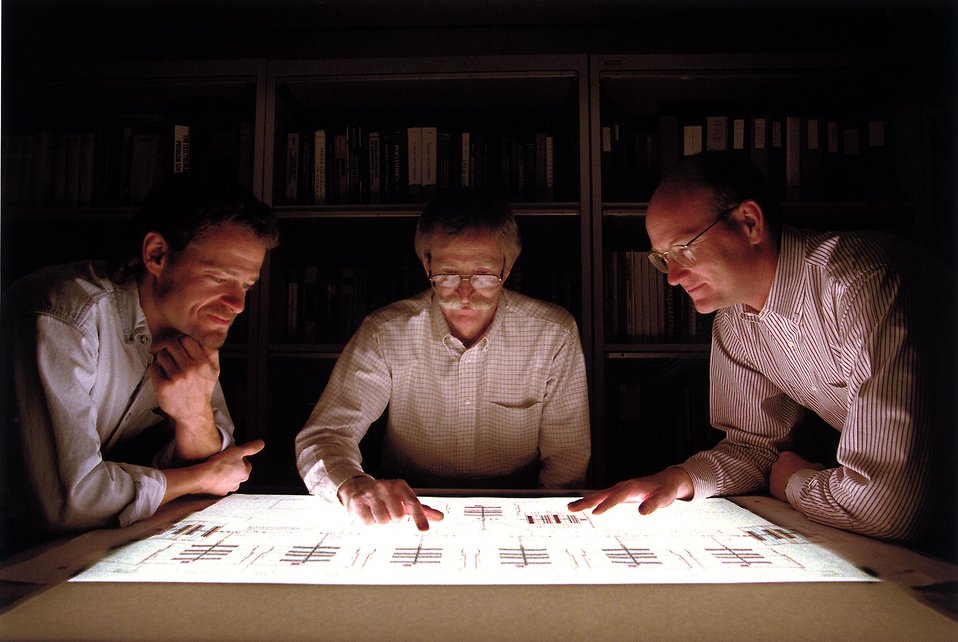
SANDIA SCIENTISTS EXAMINE A COMPUTER SCHEMATIC OF A MICROSCOPIC, SUPER SECURE MICROLOCK.

THE COMPUTER SCHEMATIC OF A MICROSCOPE SUPER SECURE ;MICROLOCK WAS MADE WITH MEMS TECHNOLOGY. MEMS DEVICES ARE CREATED IN THE MICROELECTRONICS DEVELOPMENT LAB AT SANDIA. THE MDL IS A WORLD CLASS FABRICATION FACILITY DEDICATED TO PROVIDING DEVELOPMENT AND ENGINEERING CAPABILITIES TO SUPPORT INDUSTRY, GOVERNMENT AND PROGRAMS OF NATIONAL INTEREST.